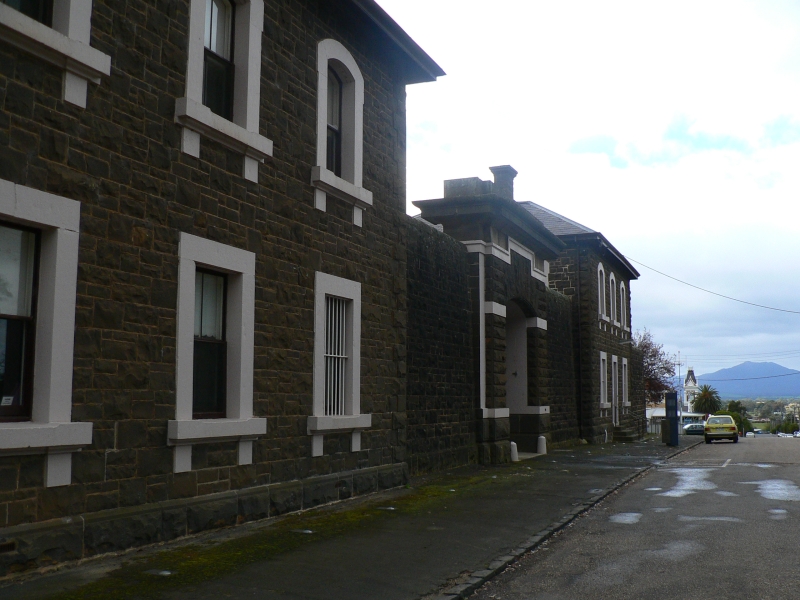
J Ward in Ararat, Victoria. FFS I took this photo so stop harassing me about it already ! --Rulesfan (talk) 23:52, 18 December 2007 (UTC)